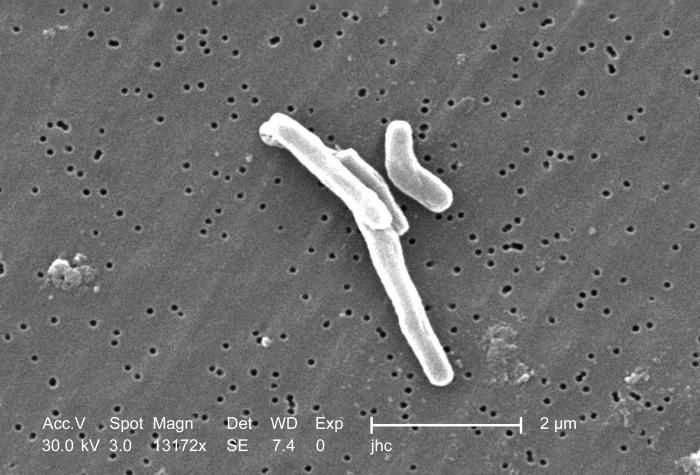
At a magnification of 13172x, this scanning electron micrograph (SEM) depicted a number of Gram-positive Mycobacterium tuberculosis bacteria. As an obligate aerobic organism M. tuberculosis can only survive in an environment containing oxygen. This bacterium ranges in length between 2 - 4�m, and a width between 0.2 - 0.5�m.